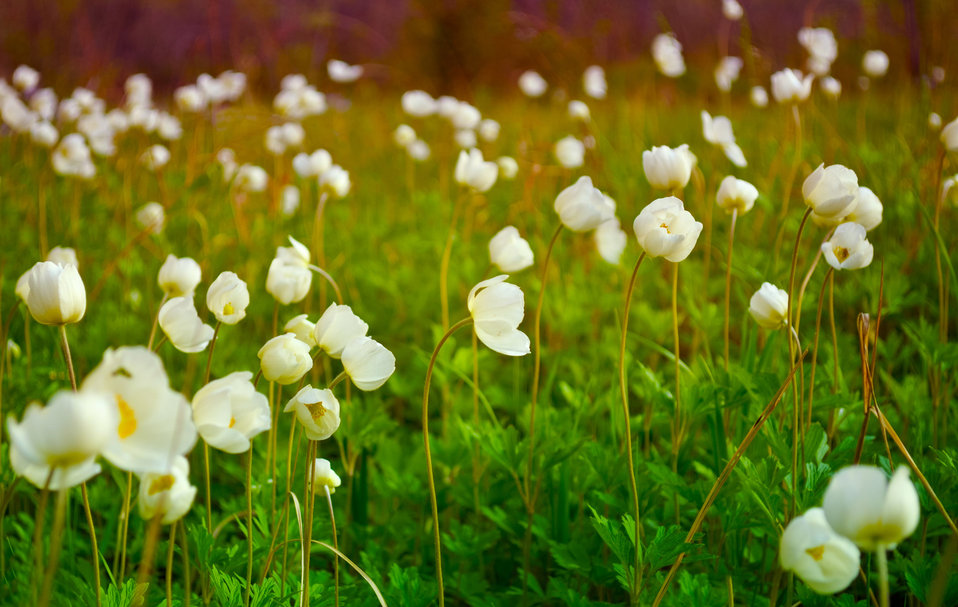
Forest flowers

Green background of forest flowers.